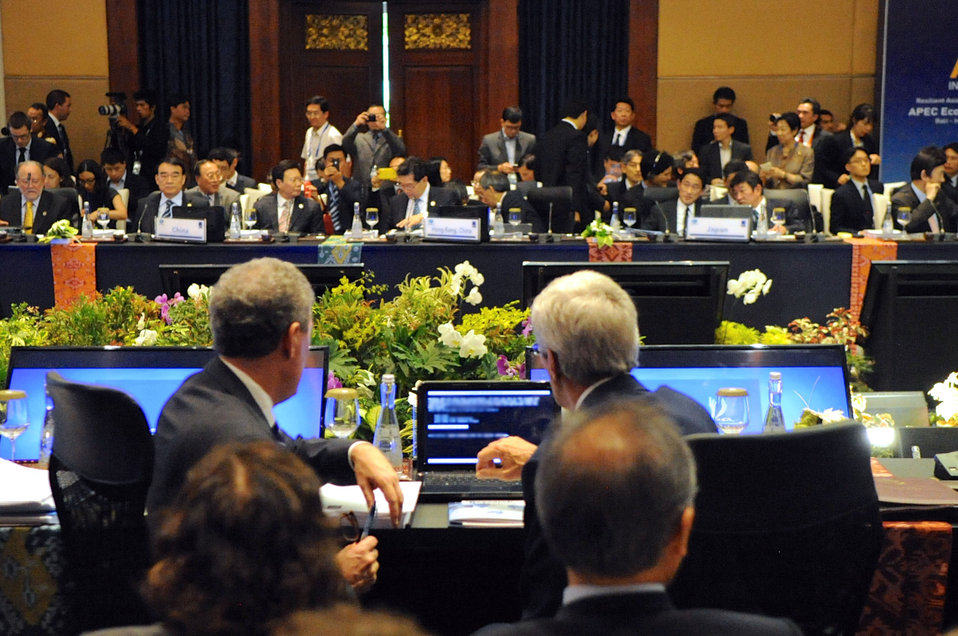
Secretary Kerry and U.S. Trade Represenative Froman Particpate in the Ministerial Meeting Opening Plenary Session

U.S. Secretary of State John Kerry and U.S. Trade Representative Michael Froman join their counterparts for a plenary session to open the 2013 APEC Ministerial Meeting in Bali, Indonesia, on October 4, 2013.